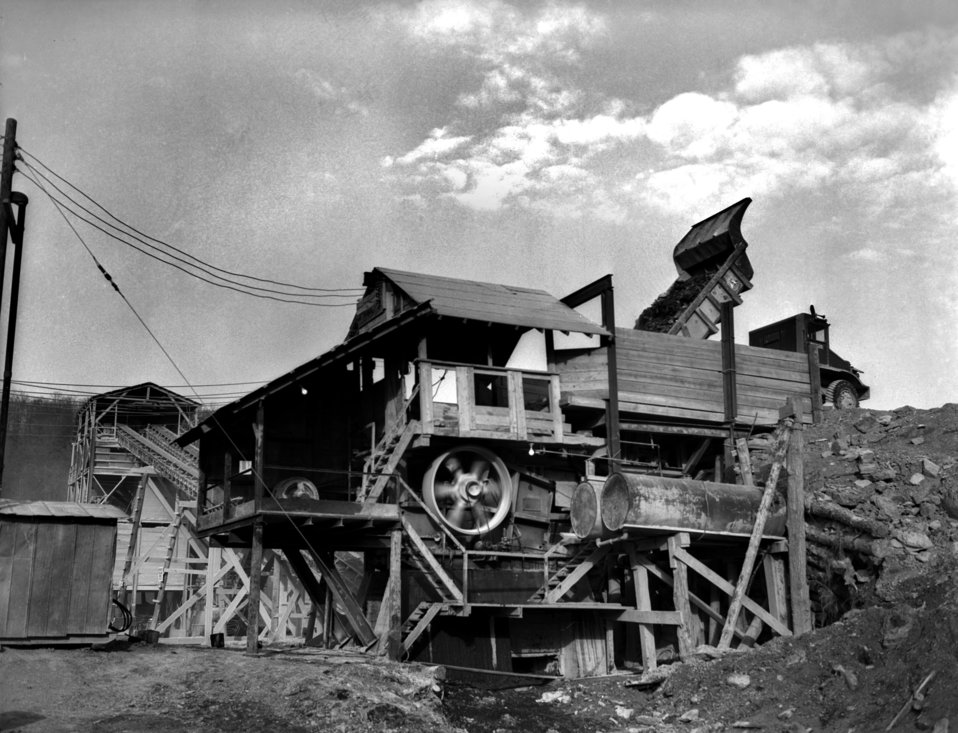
Quarry Oak Ridge

3263-6a DOE photo Ed Westcott 1-23-1947 Oak Ridge Tennessee